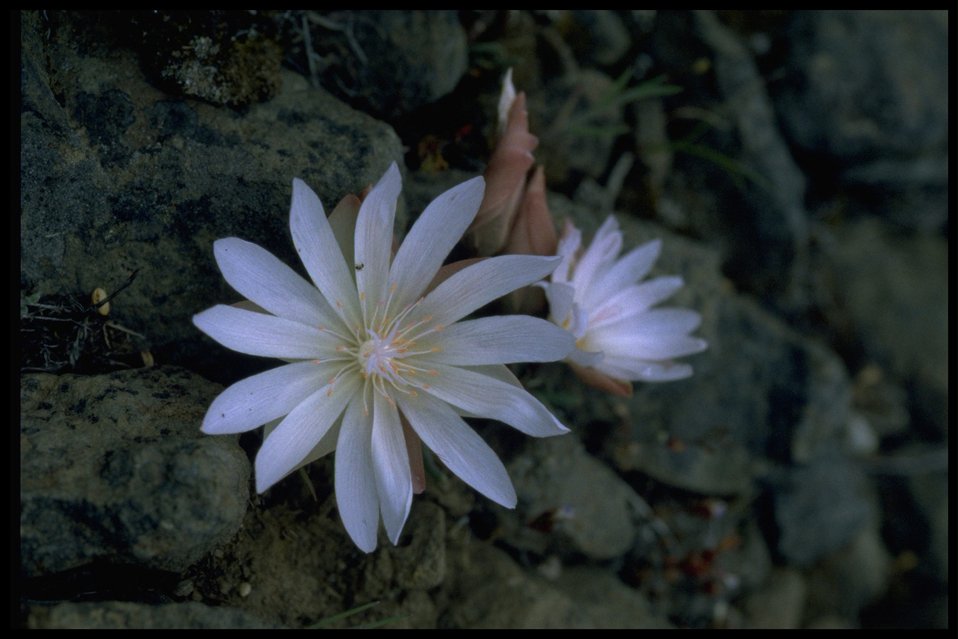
Closeup shot of bitter root (Lewisia rediviva).